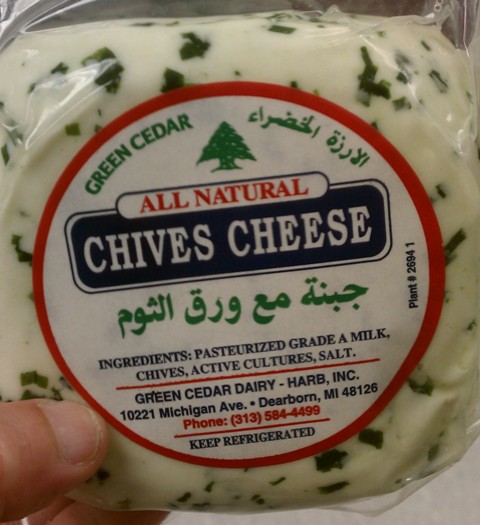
RECALLED - Cheese

December 27, 2011 - Product Recall - Green Cedar Dairy Announces the Recall of All Natural Ackawi Cheese and All Natural Chives Cheese with a sell by date up to July 1, 2012 due to Possible Listeria Contamination.